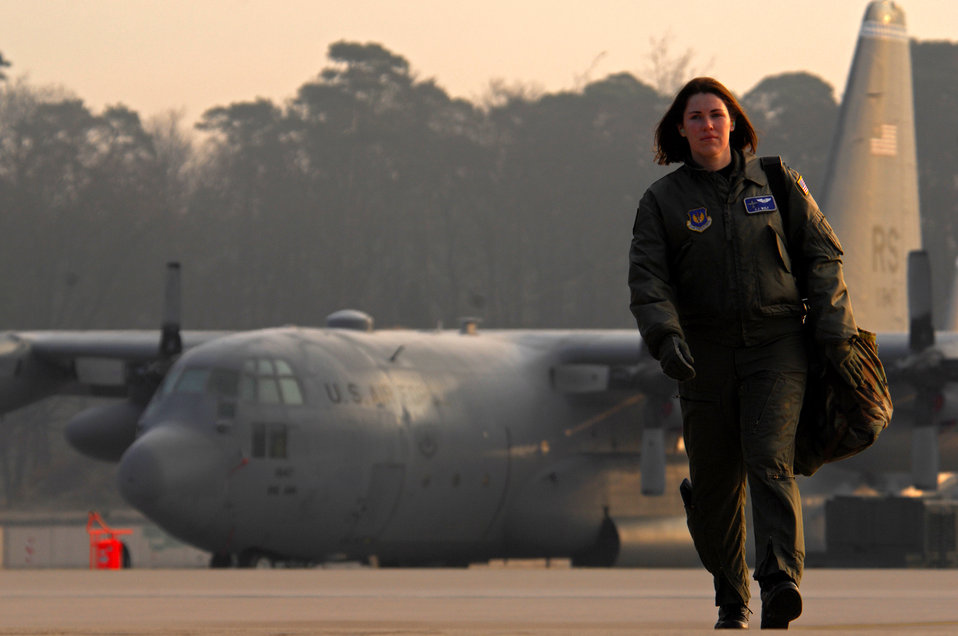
Women's History Month: Honoring past, present, future

Capt. J.J. Wolf walks off the flightline March 3 at Ramstein Air Base, Germany. Captain Wolf is a 37th Airlift Squadron C-130 Hercules pilot.